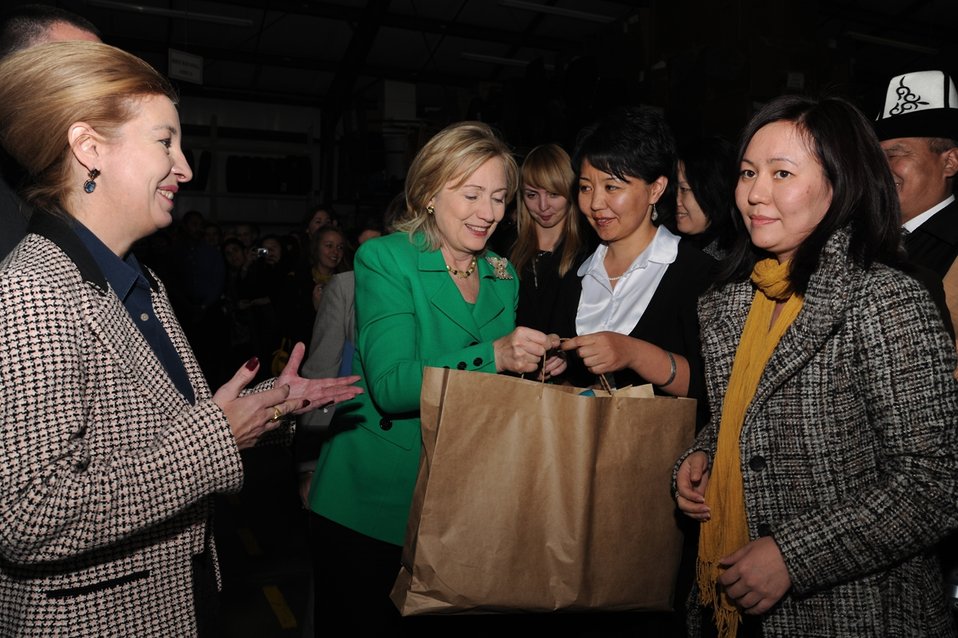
Secretary Clinton Receives a Gift

U.S. Secretary of State Hillary Rodham Clinton receives a gift from the Foreign Service Nationals at U.S. Embassy Bishkek in Bishkek, Kyrgyzstan, on December 2, 2010.